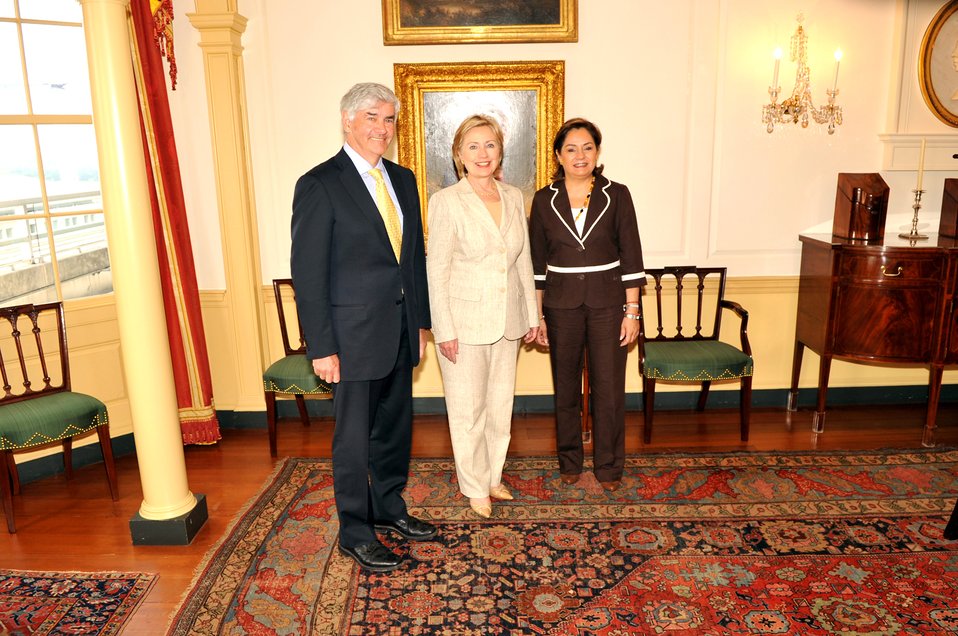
Secretary Clinton Hosts North American Trilateral Ministerial

U.S. Secretary of State Hillary Rodham Clinton hosts the North American Trilateral Ministerial with Her Excellency Dr. Patricia Espinosa Cantellano, Secretary of Foreign Relations of Mexico and The Honorable Lawrence Cannon, P.C., M.P., Minister of Foreign Affairs of Canada, in the Benjamin Franklin Room of the U.S. Department of State in Washington, DC July 16, 2009.